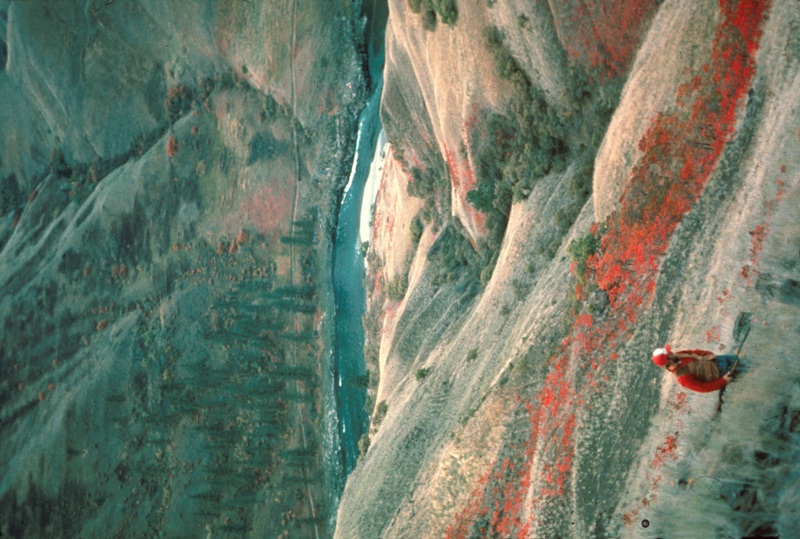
Lower Salmon River Cottonwood Field Office UCSC Upper Columbia-Salmon Clearwater District